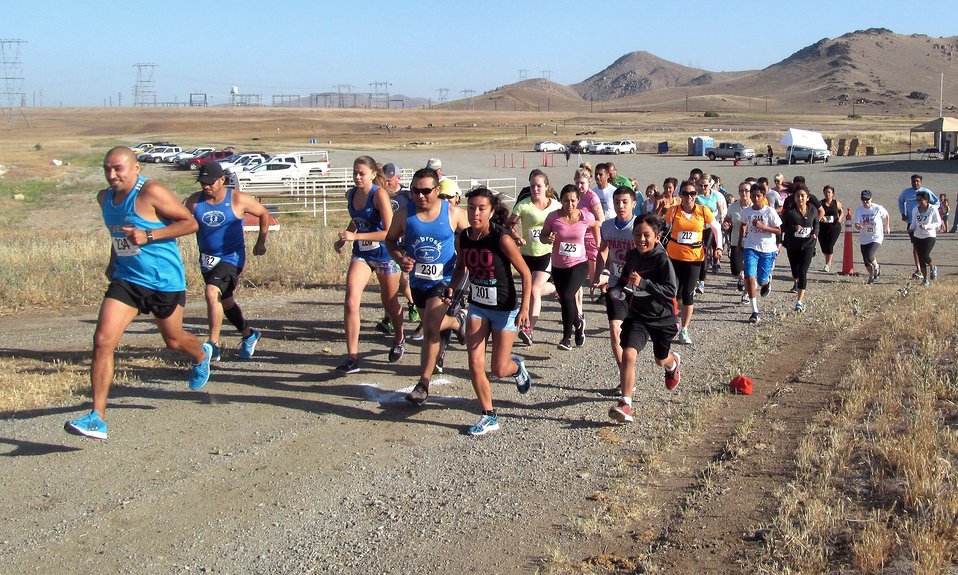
Success Lake hosts first-ever 5K trail run

Runners start the race at the first-ever 5K trail run at the U.S. Army Corps of Engineers Sacramento District’s Success Lake near Porterville, Calif., May 10, 2014. The Corps partnered with the City of Porterville Parks and Leisure Department and MaxFit Studios to host the event, which brought in 43 runners and walkers.